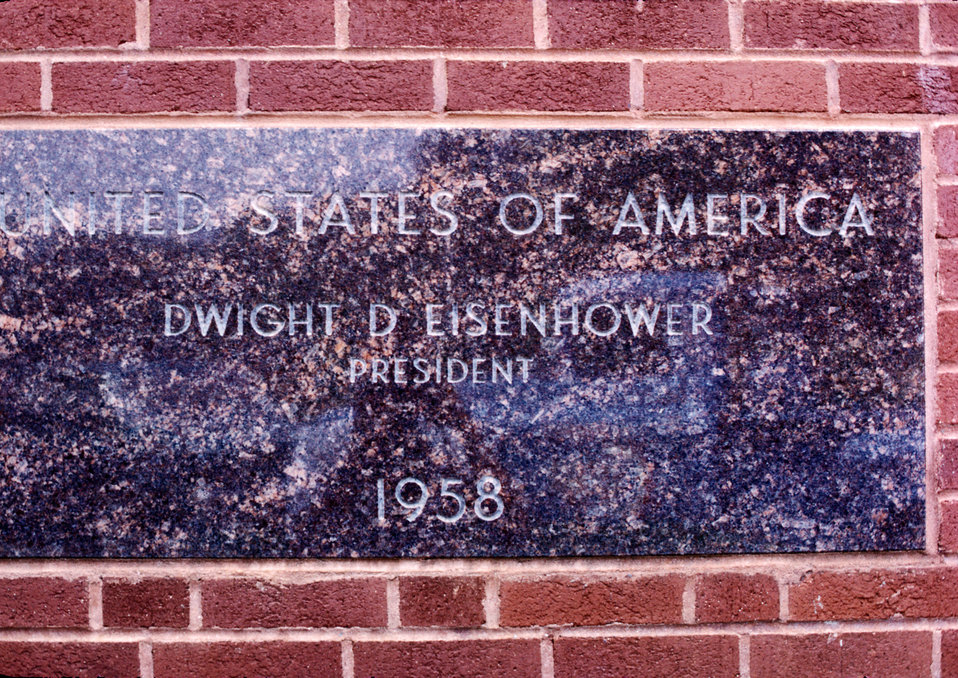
Dwight D. Eisenhower cornerstone on CDC, Building 1, Atlanta, Georgia.